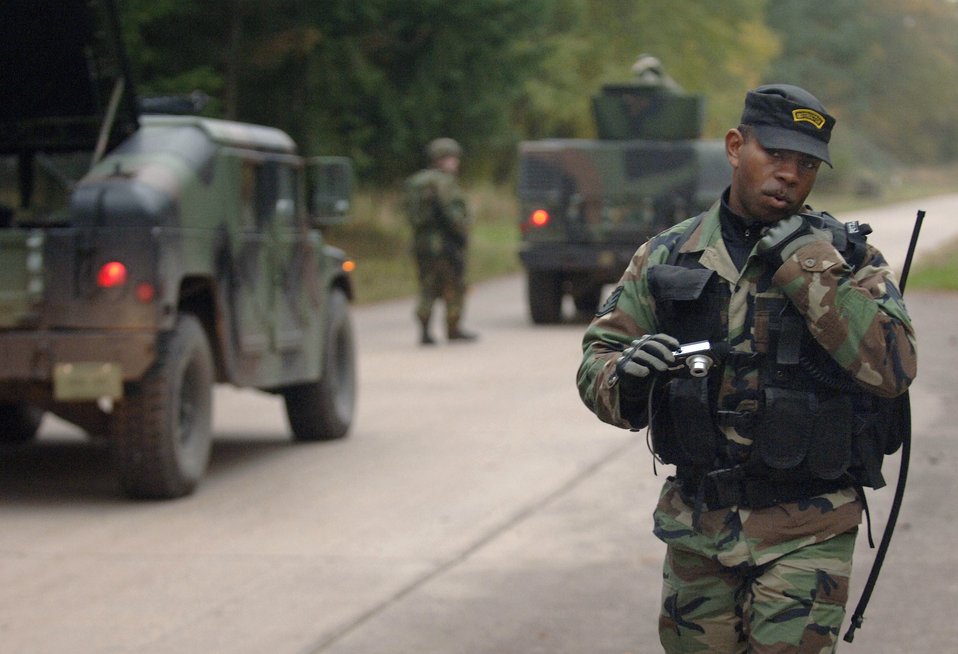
Creek Defender

Staff Sgt. Avonte Seabrooks coordinates details of a convoy patrol scenario while using a digital camera to record observations Oct. 26 on the final day of a two-week pre-deployment course known as Creek Defender on Baumholder U.S. Army Garrison in southern Germany. The observations will be compiled into detailed reports that are sent back to unit commanders highlighting the strengths and weaknesses of each deploying security forces team. Sergeant Seabrooks is an instructor and one of 22 people assigned to the 786th Security Forces Squadron's regional training center at Sembach Air Base, Germany.